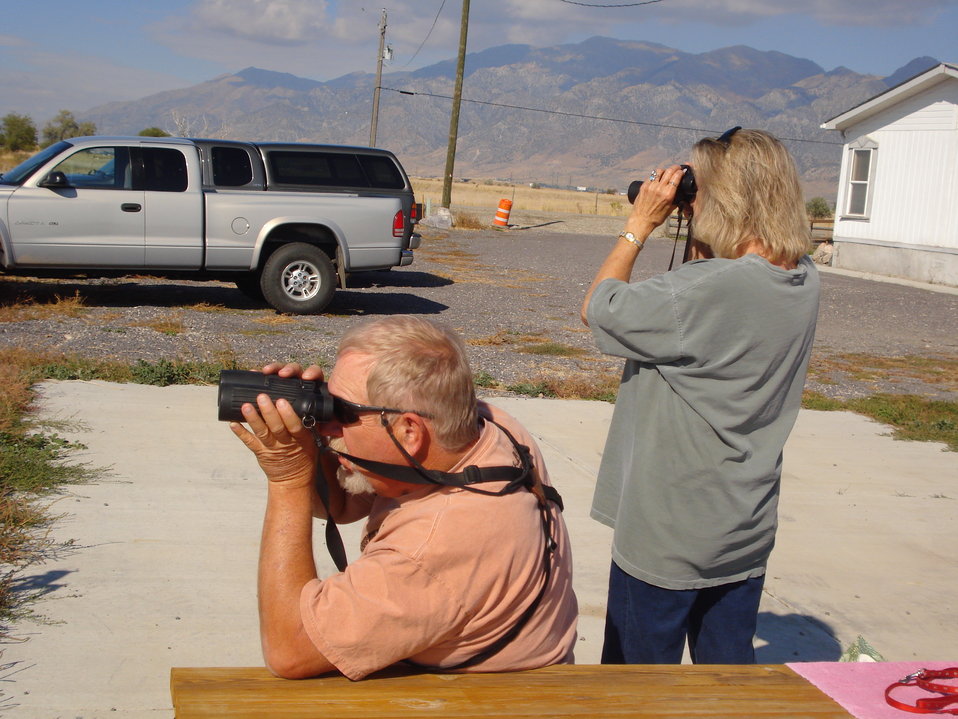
Bird Watching

Another NWRS Big Six - 'Wildlife Observation' was utlilized during the 2010 BIG SIT at the Bear River Migratory Bird Refuge. Here, BIG SIT participants Brian Ferguson and Marilyn Perry focus in a passing bird to add to their list for the day.